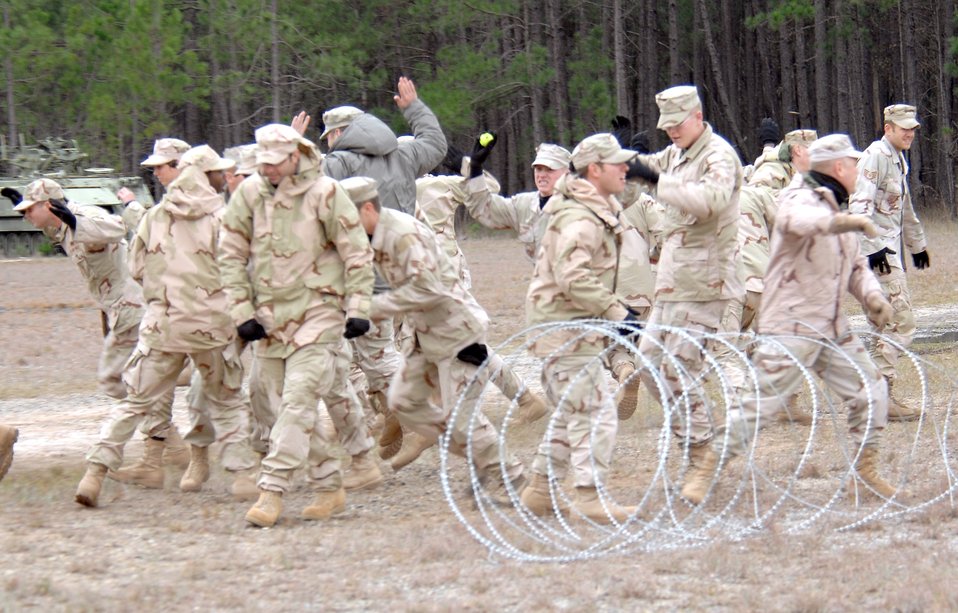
Moody Airmen test new, nonlethal method of repelling enemy

820th Security Forces Group Airmen react to being engaged by the Active Denial System during a perimeter security scenario Jan. 24 at Moody Air Force Base, Ga. Some of the intended benefits of ADS include helping troops secure perimeters, peacekeeping, humanitarian assistance and crowd disperal.